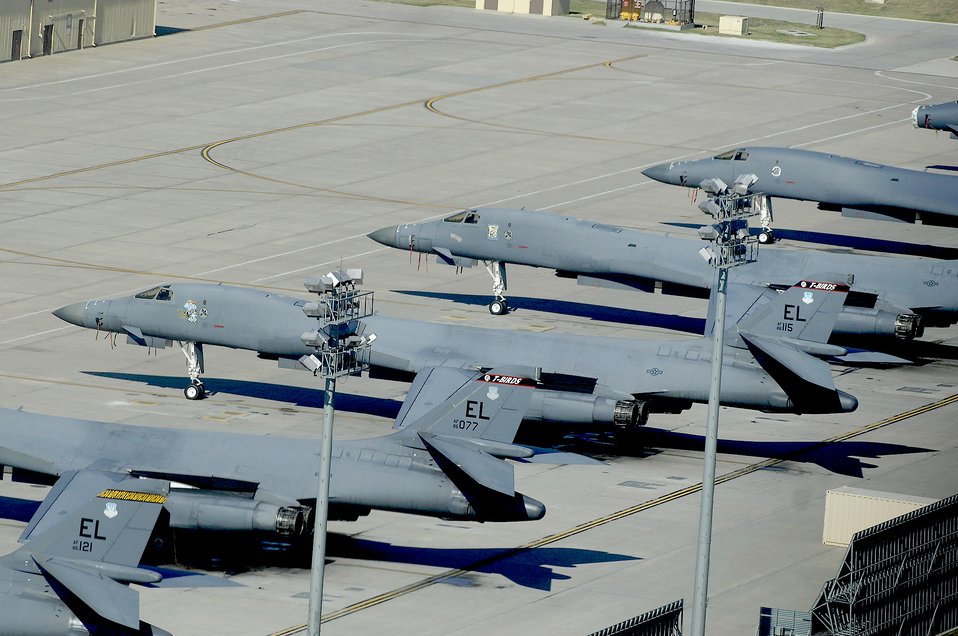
Ready in a moment?s notice

B-1B Lancers sit on the flightline Sept. 26, 2009, at Ellsworth Air Force Base, S.D. The B-1B can rapidly deliver massive quantities of precision and nonprecision weapons against any adversary, anywhere in the world.